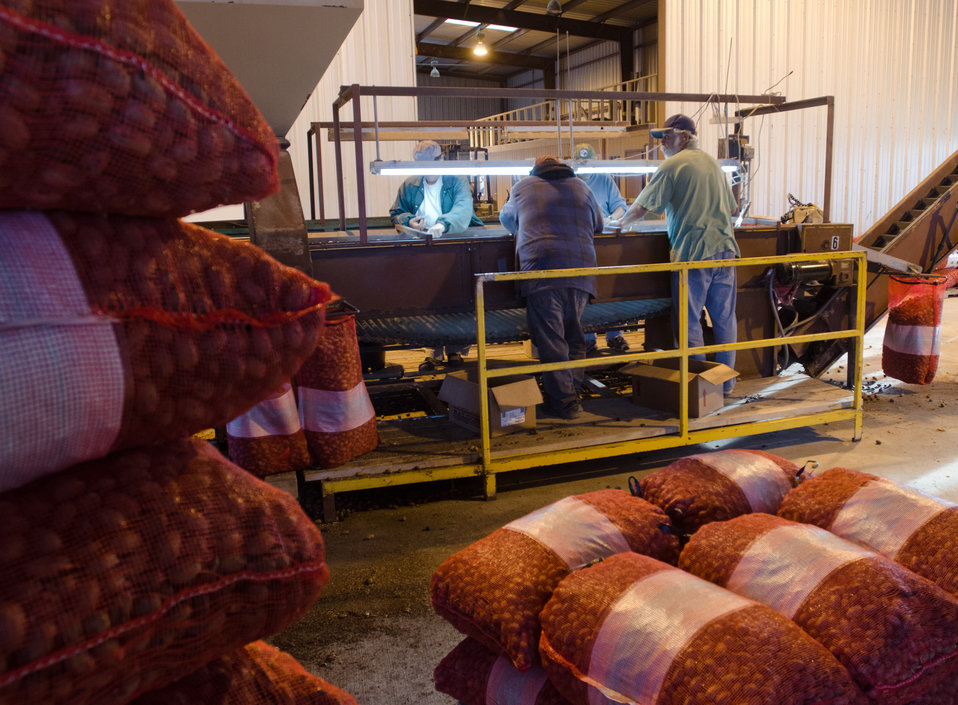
Left to Right, Juan Ayala, Teodoro Gamez, Jesus Gomez and Jose Camacho apply their keen eye to sort out any pecans that are less than perfect from the last load of this season's harvest at Arrowhead Farms of Crystal City, TX, on Friday, December 9, 2011, owned by Mr. Akram Mohammad, a pecan farmer since 2005. The 719 acre farm with 10,000 trees, features some orchards with underground micro irrigation system that feeds water to the roots of 4,380 pecan trees on 146 acres. Mr. Mohammad said, “USDA (U.S. Department of Agriculture) was essential to my business and trees surviving the recent exceptional drought. The trees were stress free thanks to underground micro-irrigation. This is essential to the future growth of Texas agriculture and good for America.” U.S. Department of Agriculture’s (USDA) Environmental Quality Initiative Program (EQIP) awarded Mr. Mohammad a $130,000 grant in 2008. He provided $26,000 for the balance of the $156,000 total cost to install a 146-acre underground micro-irrigation for 4,380 trees.